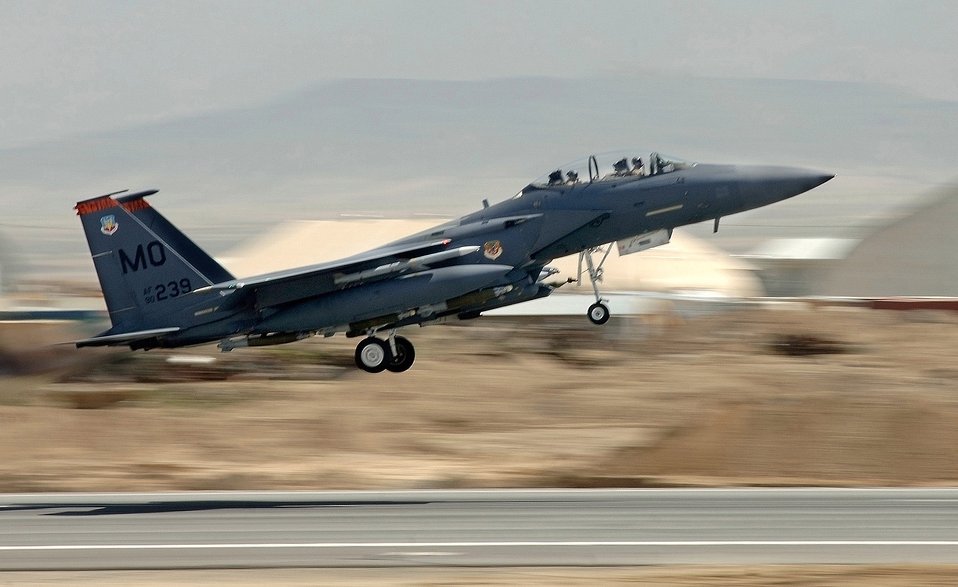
April 12 airpower: F-15s provide overwatch support

An F-15E Strike Eagle jet takes off from Bagram Air Base, Afghanistan, to provide close-air support for International Security Assistance Force ground operations. Coalition aircraft like the F-15E flew 43 close-air-support missions in support of ISAF April 12.